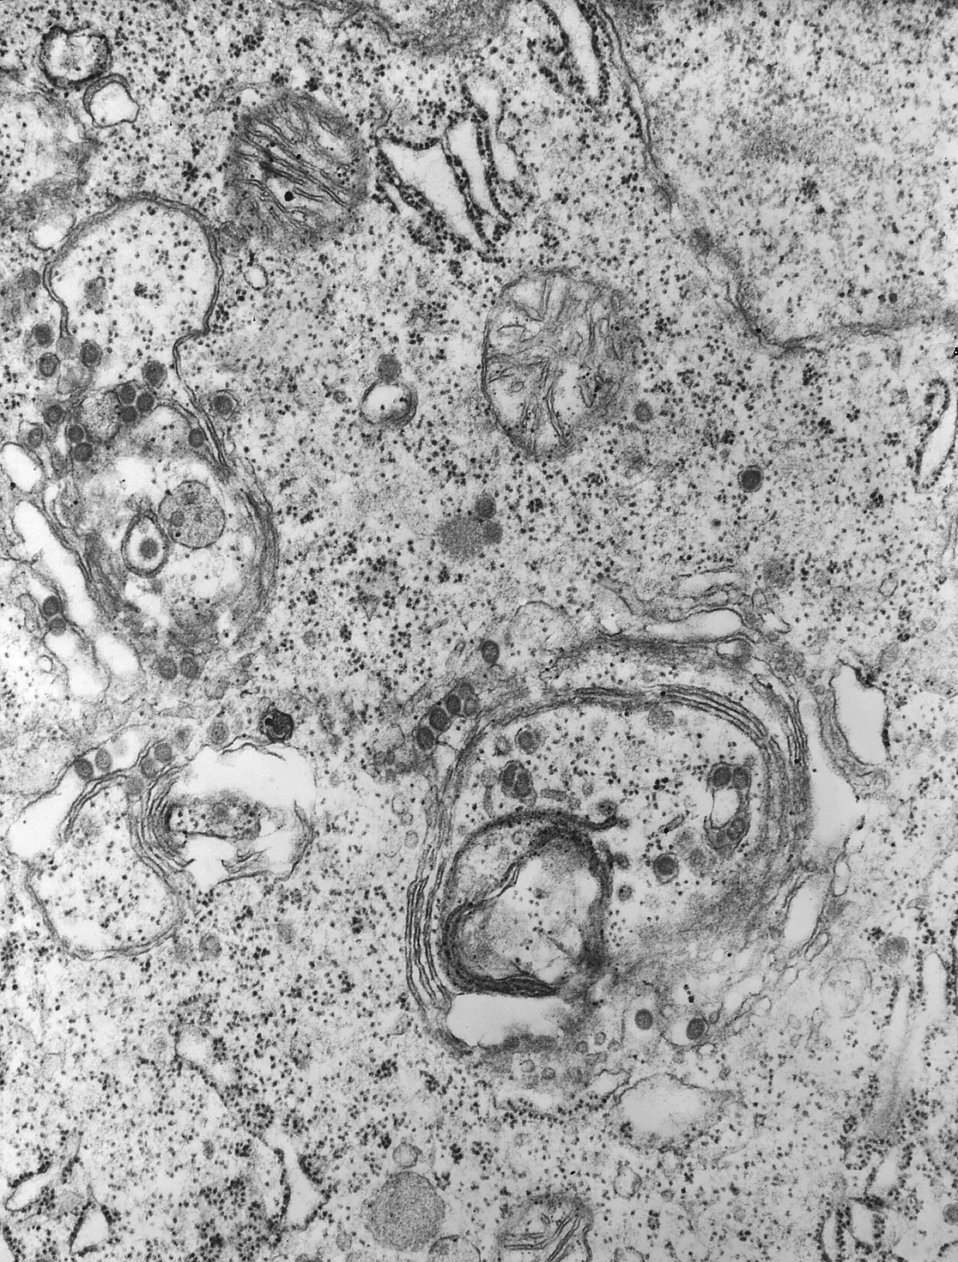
This negatively-stained transmission electron micrograph (TEM) revealed the presence of numerous California encephalitis virus virions. Contained within its enveloped capsid, the genome of this Bunyaviridae family member consists of three segments of negative-sense single-stranded RNA ((-)ssRNA).